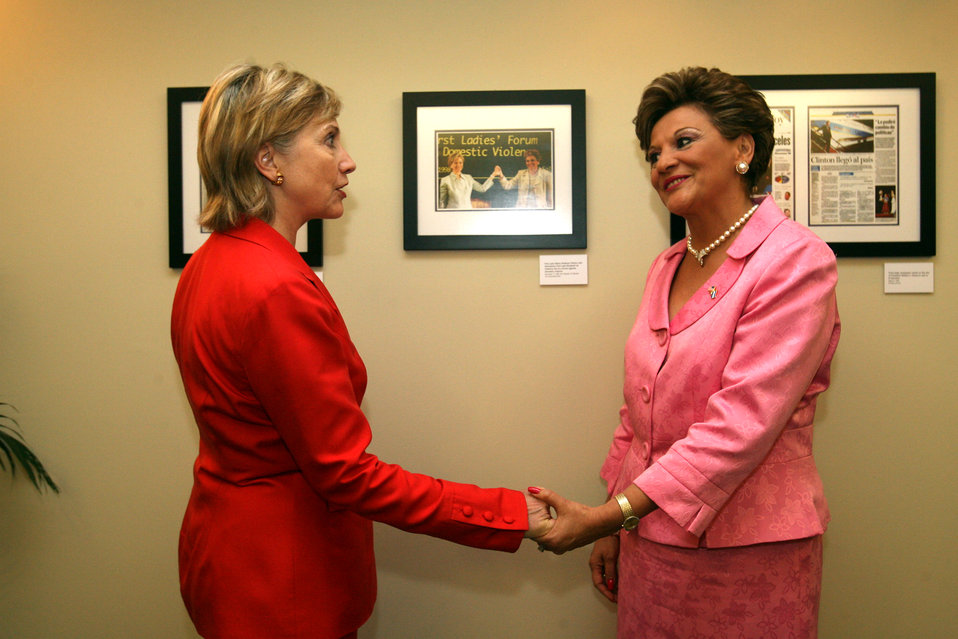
Photo Exhibit: “The United States and El Salvador, An Enduring Relationship'

U.S. Secretary of State Hillary Rodham Clinton and Former Salvadoran First Lady Elizabeth de Calderon Sol pose in front of a 1988 in San Salvador, El Salvador June 1, 2009.. More than 30 historical pictures are part of a U.S. Embassy San Salvador photo exhibit entitled “The United States and El Salvador, An Enduring Relationship”. The exhibit shows more than 30 photos dating from 1928 to date of different visits of U.S. leaders to El Salvador.